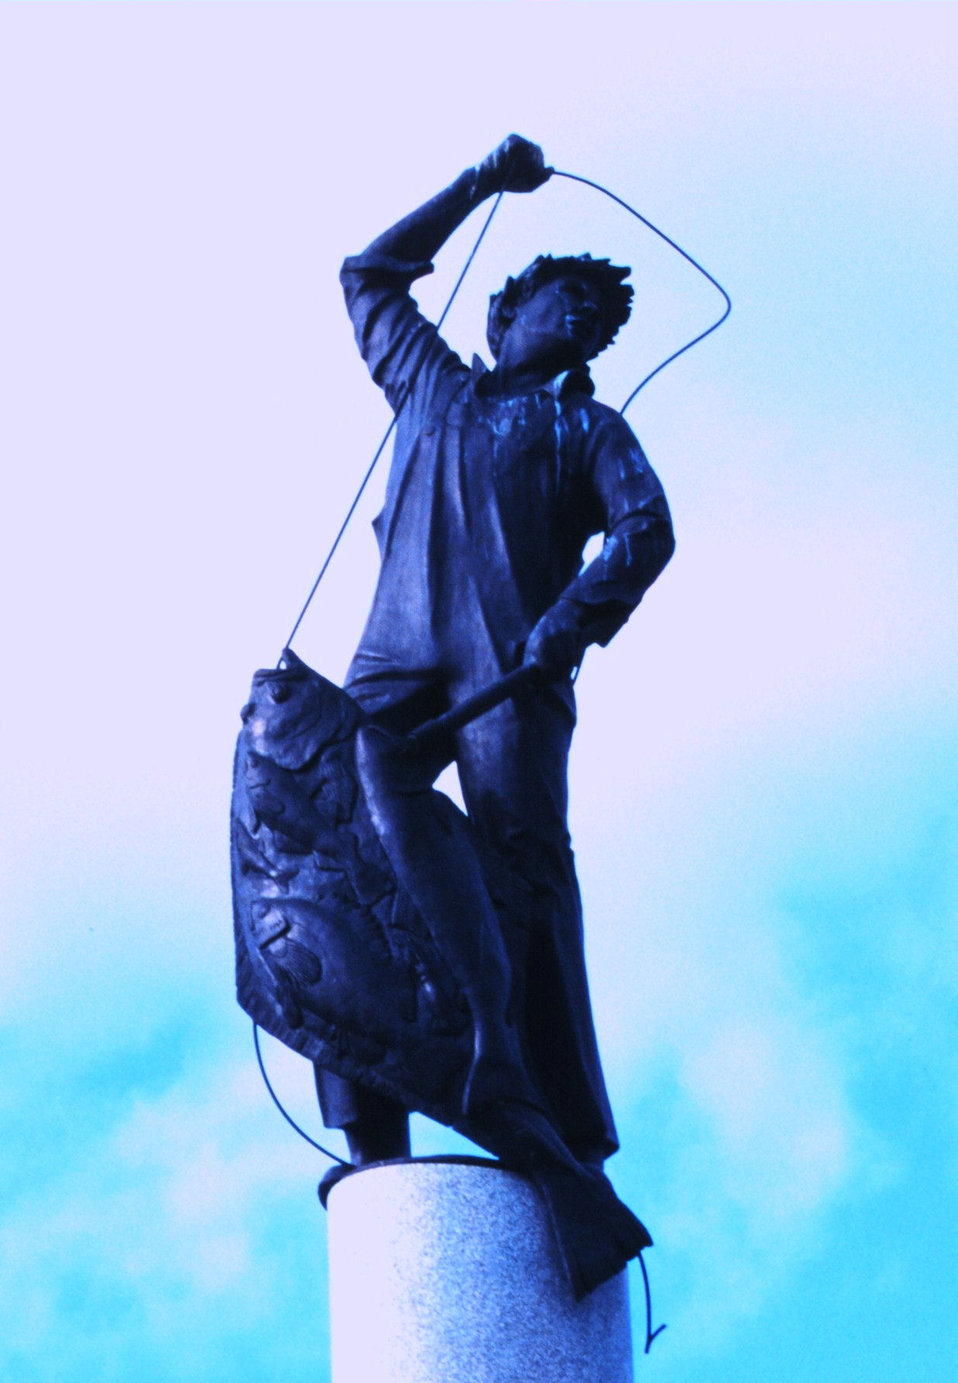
Statue of halibut fisherman adorning top of Seattle's Fishermen's Memorial